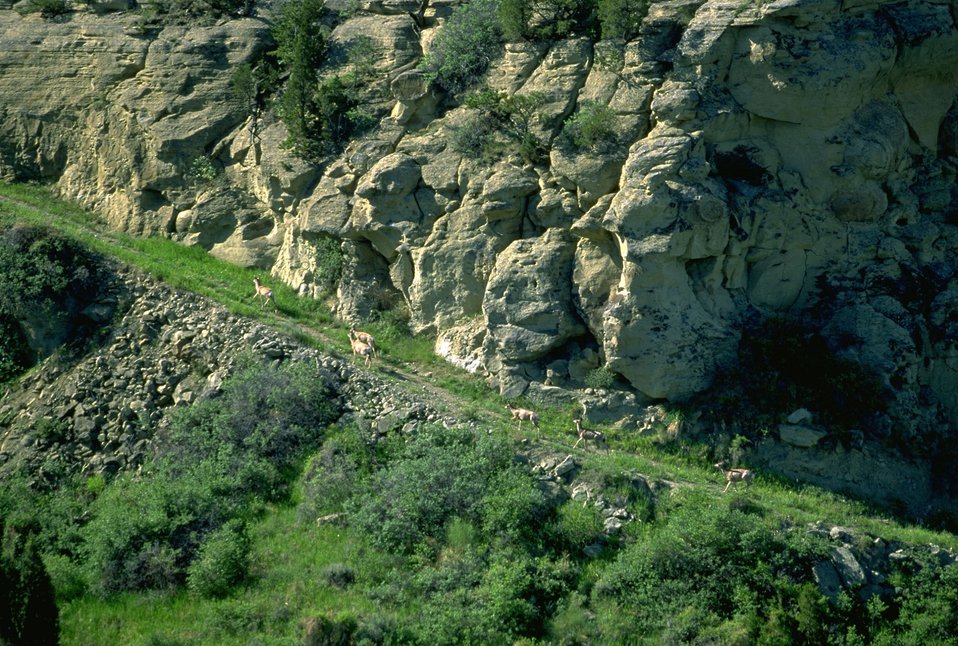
Mule Deer climbing a trail in the Four Dances Natural Area